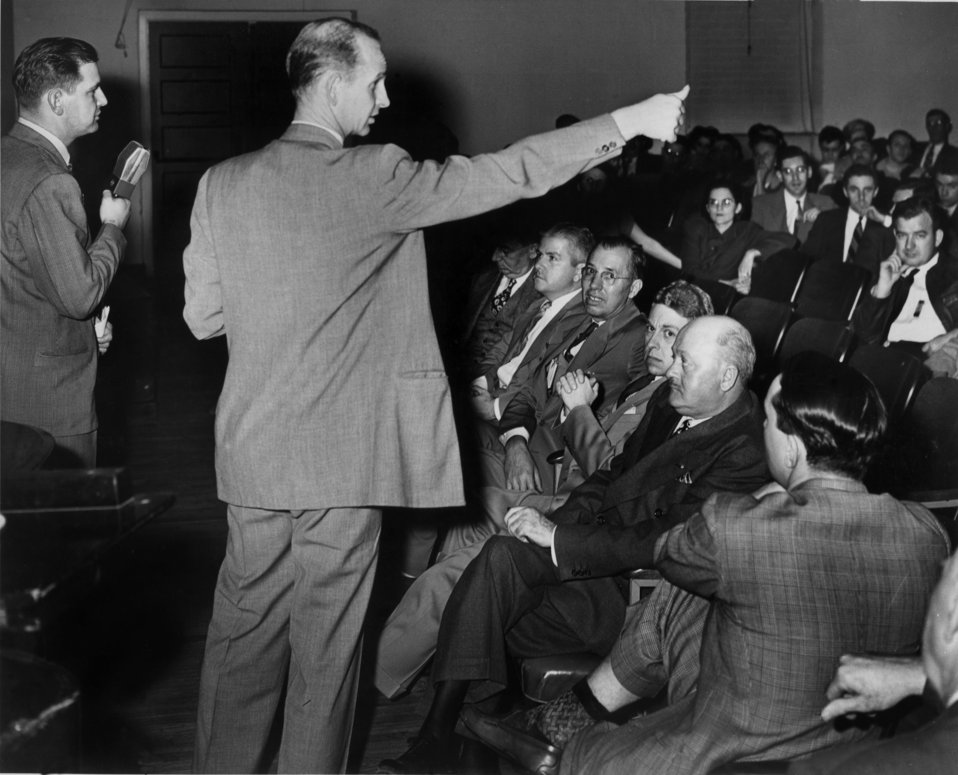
Town Meeting Sub. Personal Property Tax Oak Ridge

3387-4 DOE photo by Ed Westcott 1947 Oak Ridge, Tennessee